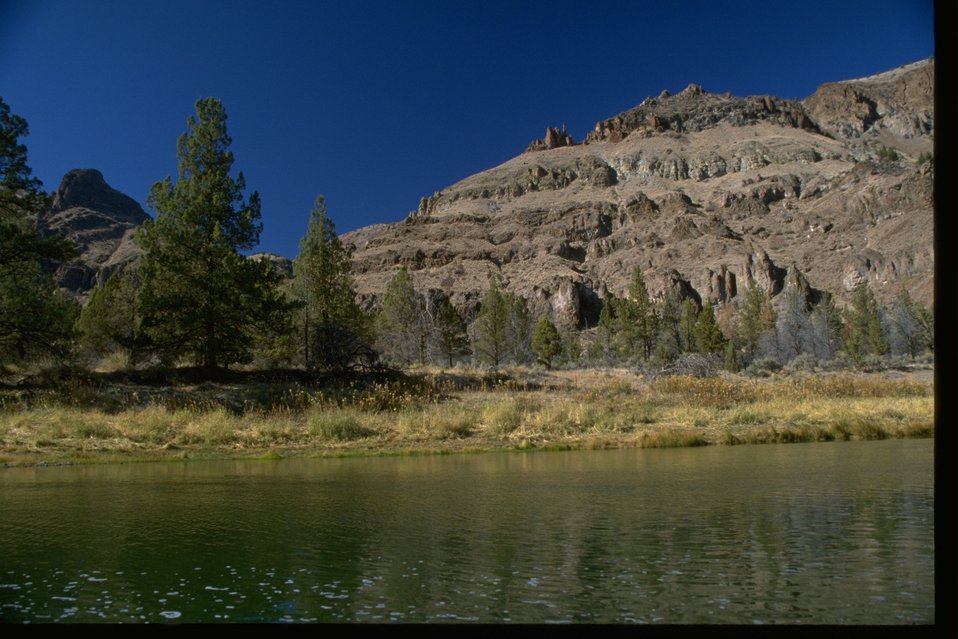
Rocky peaks above juniper and the John Day River.